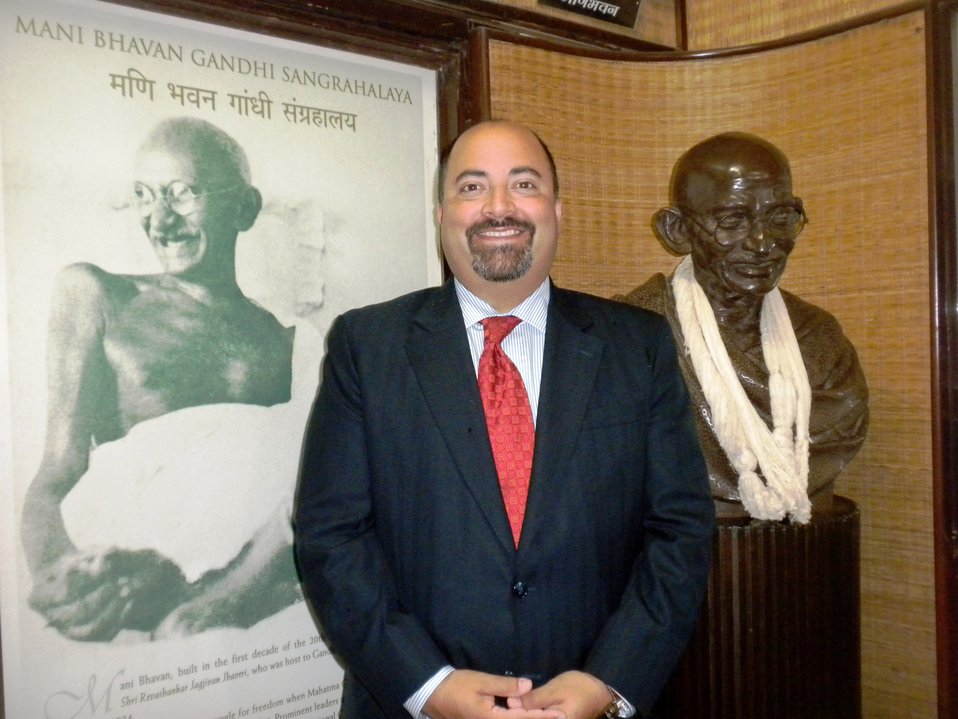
Acting Deputy Assistant Secretary Keshap Shares Photos from India and Nepal

U.S. Acting Deputy Assistant Secretary in the Bureau of South and Central Asian Affairs Atul Keshap shares photos from his August 2010 trip to India and Nepal.